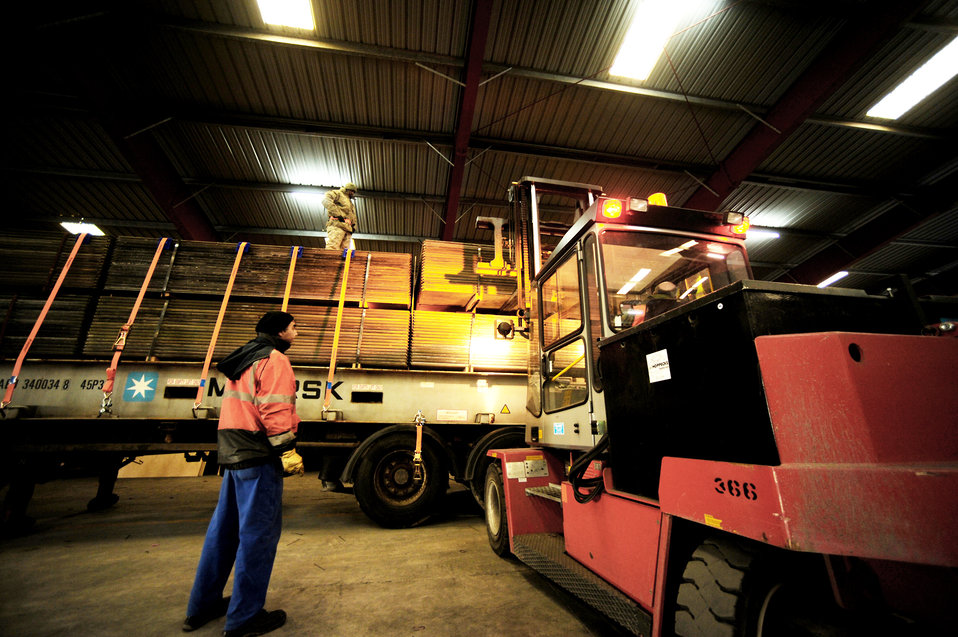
U.S., Luxembourg partnership support surge

Air Force and local members of the Warehouses Service Agency load an AM-2 matt landing strip Feb. 22, 2010, at the Central Region Storage Facility, Sanem, District of Luxembourg, in support of ongoing war efforts. The Air Force members are from the 86th Material Maintenance Squadron, Ramstein Air Base, Germany.